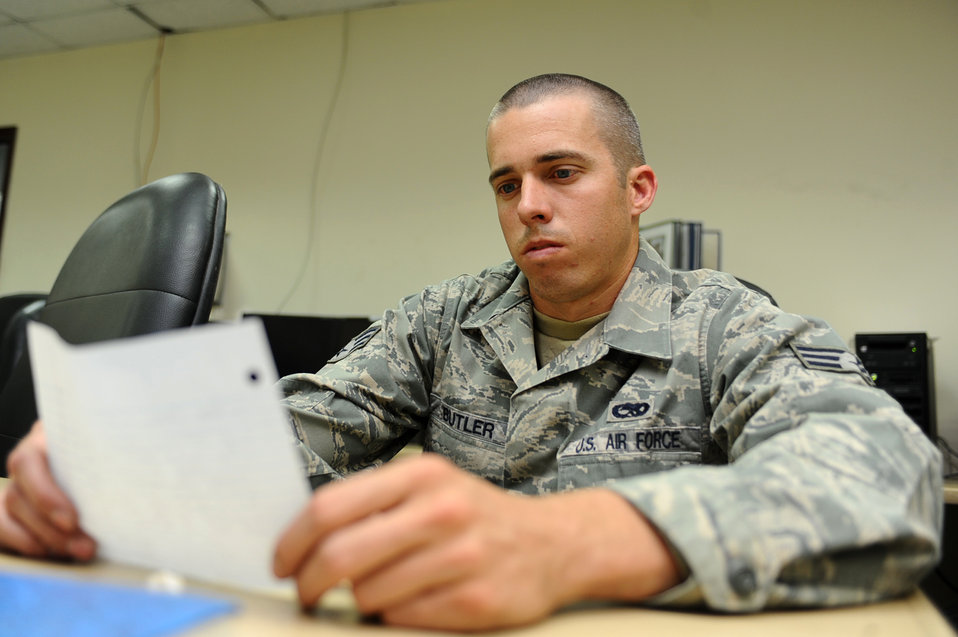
Deployed Airmen support local school pen-pal program

Senior Airman Kevin Butler reads a pen-pal letter from Spring Creek School, S.D., March 26, 2010, at an air base in Southwest Asia. Airman Butler is a 34th Aircraft Maintenance Unit aircraft hydraulics technician.